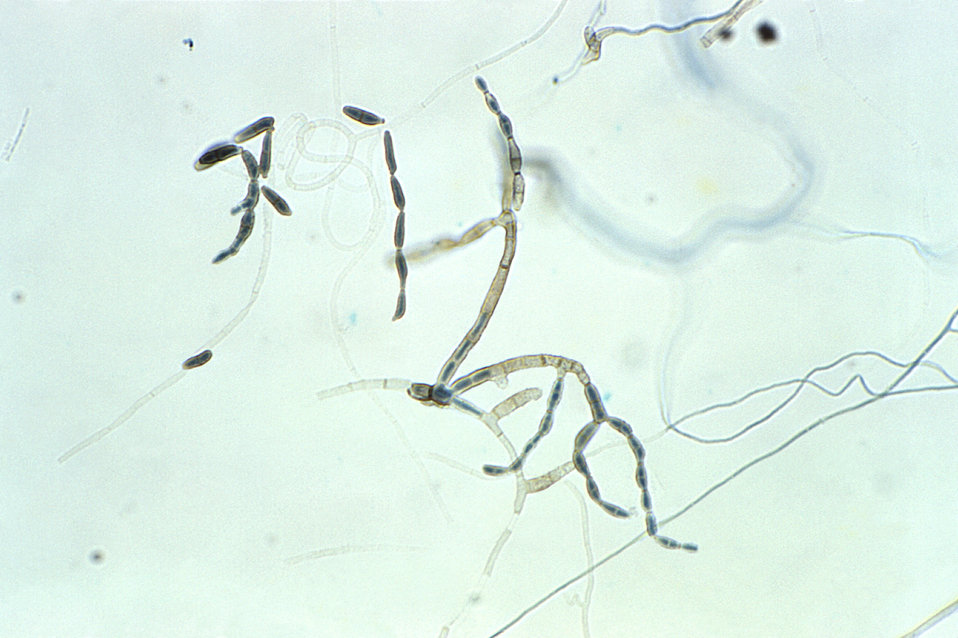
Magnified 400X, this slide culture photomicrograph highlighted some of the ultrastructural morphology exhibited by numbers of Bispora betulina, also known as Dicoccum betulinum, fungal organisms.